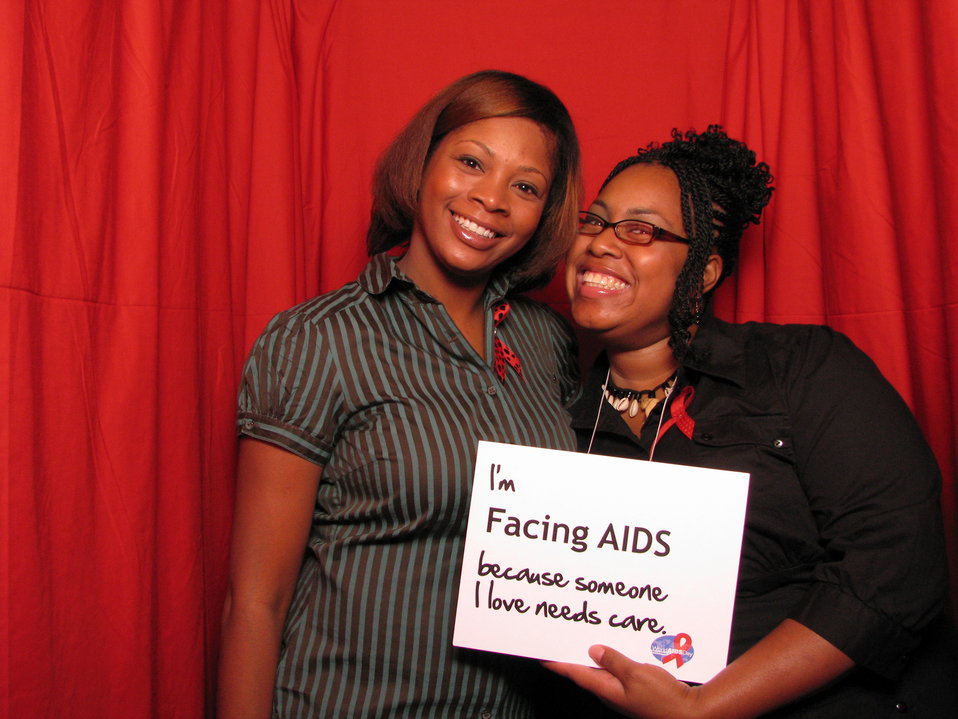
I'm FACING AIDS because someone I love needs care.

From the AIDS.gov photo booth at the U.S. Conference on AIDS, September 2010 (Orlando, FL).